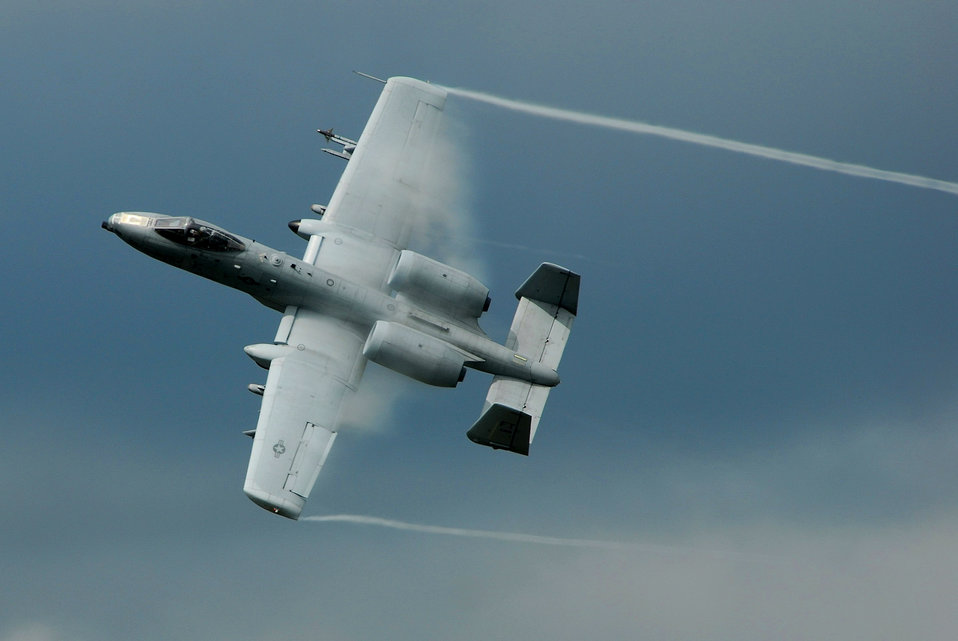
A-10s destroy enemy targets

An A-10 Thunderbolt II ground attack aircraft, similar to this one, provided close air support over Afghanistan. The digitally upgraded A-10 is equipped with satellite-guided precision weaponry and advanced communications data links for transferring information with ground-based warfighters.